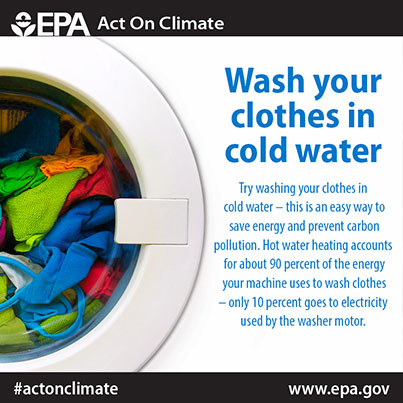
Wash your clothes in cold water

Switching to cold water while doing your laundry can save you $40 annually & help you #ActOnClimate www.epa.gov/earthday/actonclimate/